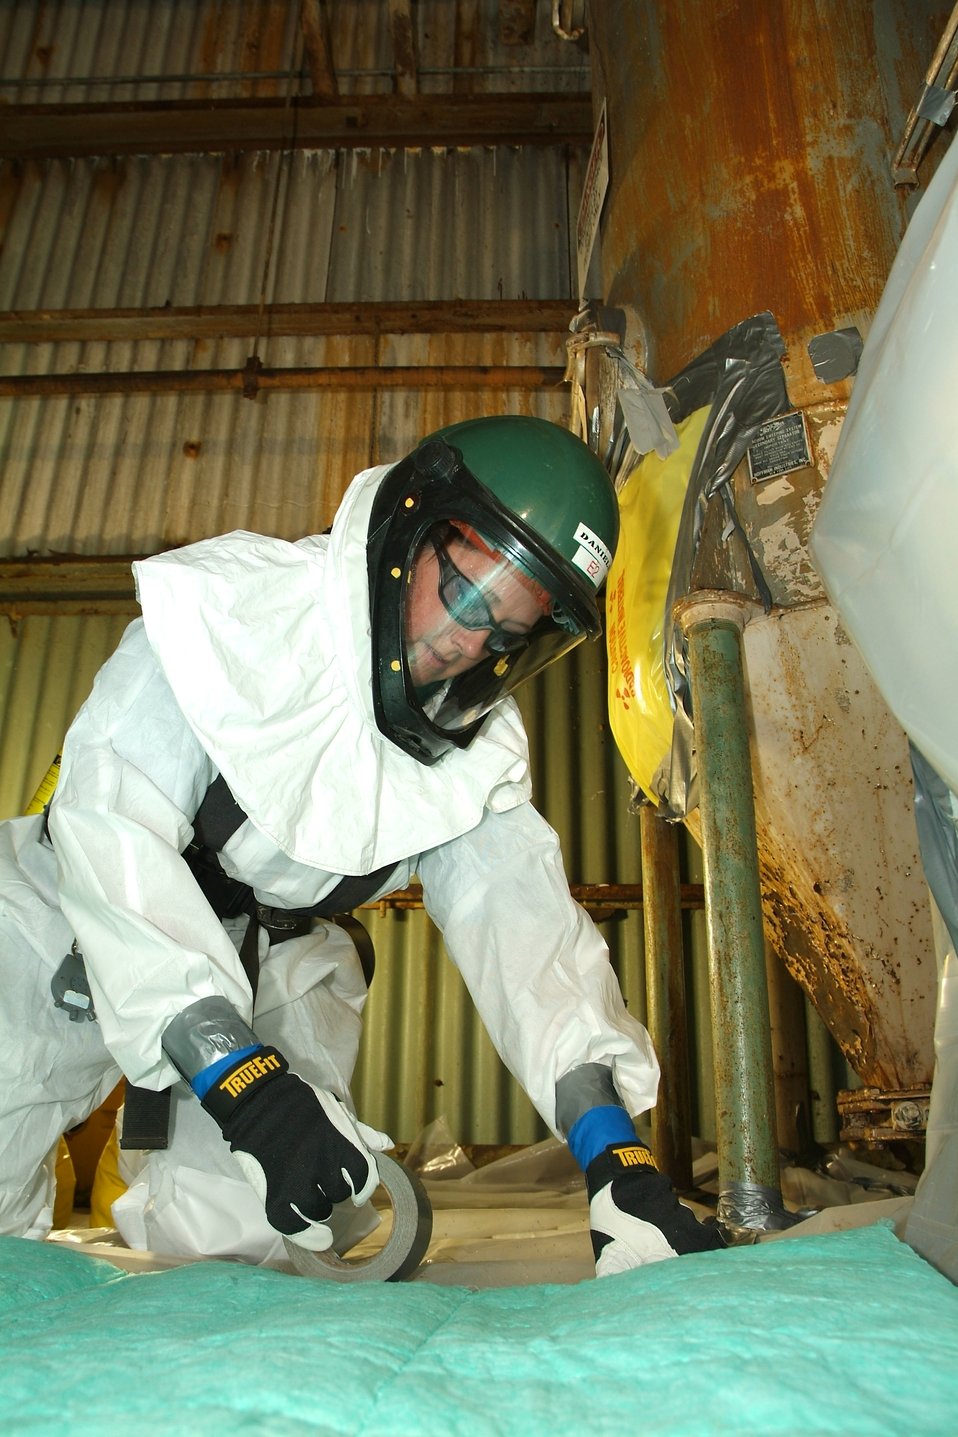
Rebecca Daniels - Paducah

Recovery Act worker Rebecca Daniels, an ex-Marine, is a self-described tomboy who loves the challenge of working amid hazardous chemicals to clean up old buildings at the Paducah Site and prepare them for demolition.

Working in multi-layered protective equipment, Daniels helped remove hydrogen, fluorine and water tanks atop one of two buildings where workers fed uranium hexafluoride into the plant during the Cold War. As is required, Daniels worked in the heavy safety clothing to avoid overheating and guard against hazardous chemical exposure.